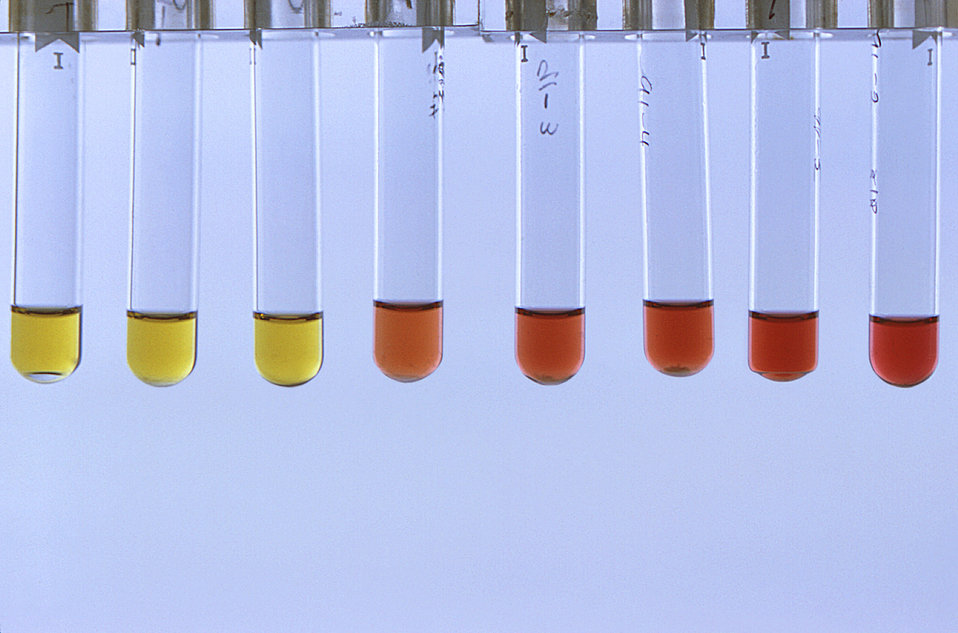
These are Mycoplasma broth tubes containing T-strain broth showing color changes.